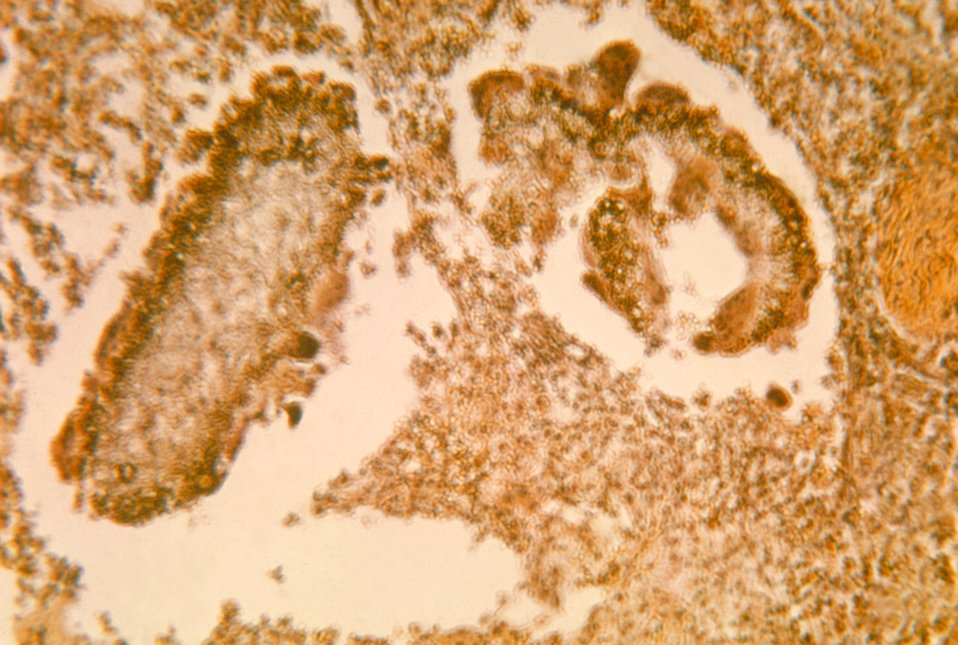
This micrograph depicts the histopathologic changes found in black grain mycetoma in dog due to Curvularia geniculata.